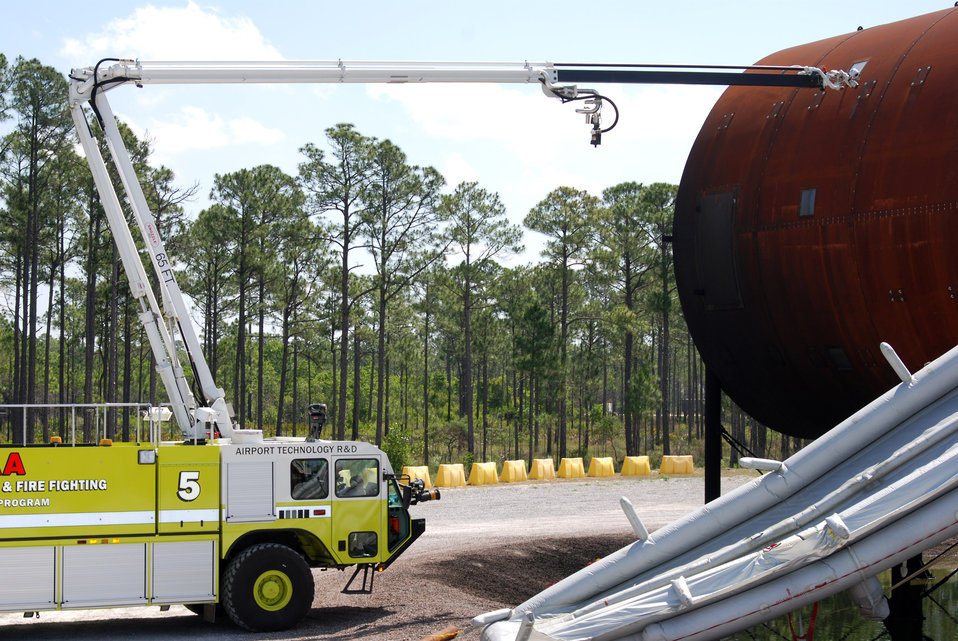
Double deck aircraft mockup aids firefighting research

Engineers demonstrate the penetrator nozzle on the new 65-foot high reach extendable turret installed on the Federal Aviation Administration Striker firefighting vehicle to simulate fighting a fire on the new large aircraft mockup Sept. 25 at Tyndall Air Force Base, Fla.